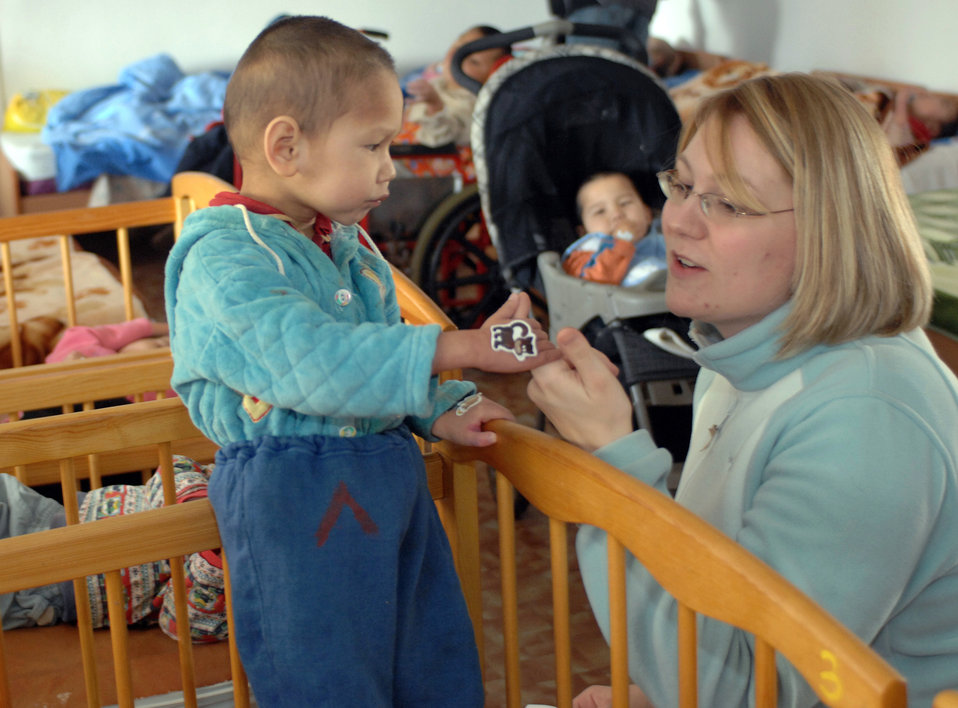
Manas Airmen make memorable bonds with Kyrgyz children

Staff Sgt. Amanda Reggler shares stickers and smiles with a child Jan. 11 at the Belovodosky orphanage north of Bishkek, Kyrgyzstan. Airmen from nearby Manas Air Base visit the orphanage frequently to share friendship and donated toys as well as clothing, blankets, diapers and toiletries. Sergeant Reggler is deployed with the 376th Expeditionary Force Support Squadron.